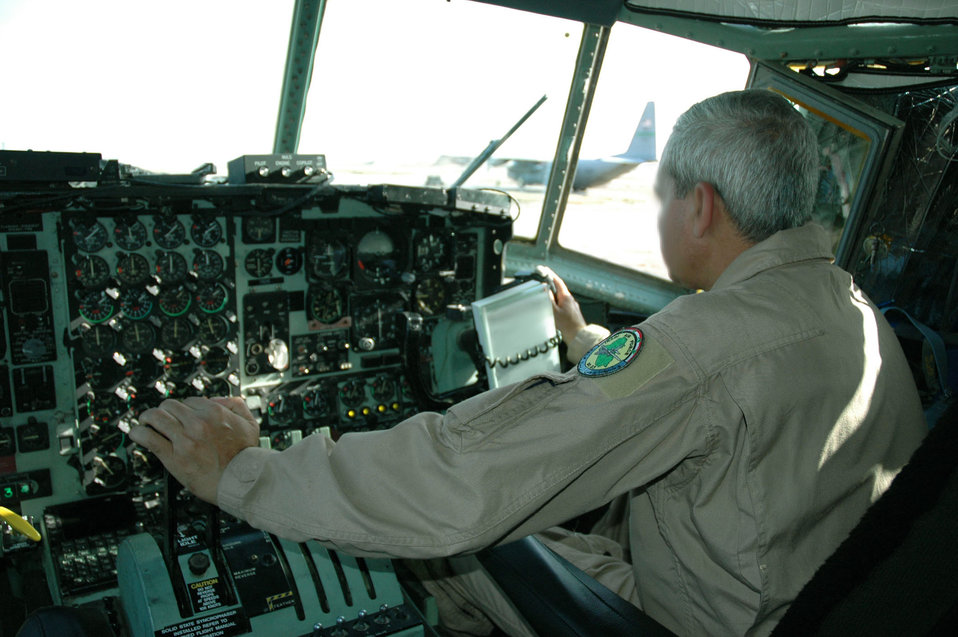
U.S. pilots train Iraqi counterparts to fly C-130 Hercules

TALLIL AIR BASE, Iraq -- A pilot training with the Iraqi air force's 23rd Squadron runs through a systems check before taking off in one of three C-130 Hercules provided to the Iraqi air force by the Department of Defense. Airmen from the 777th Expeditionary Airlift Squadron are teaching the Iraqi airmen to use their new aircraft.